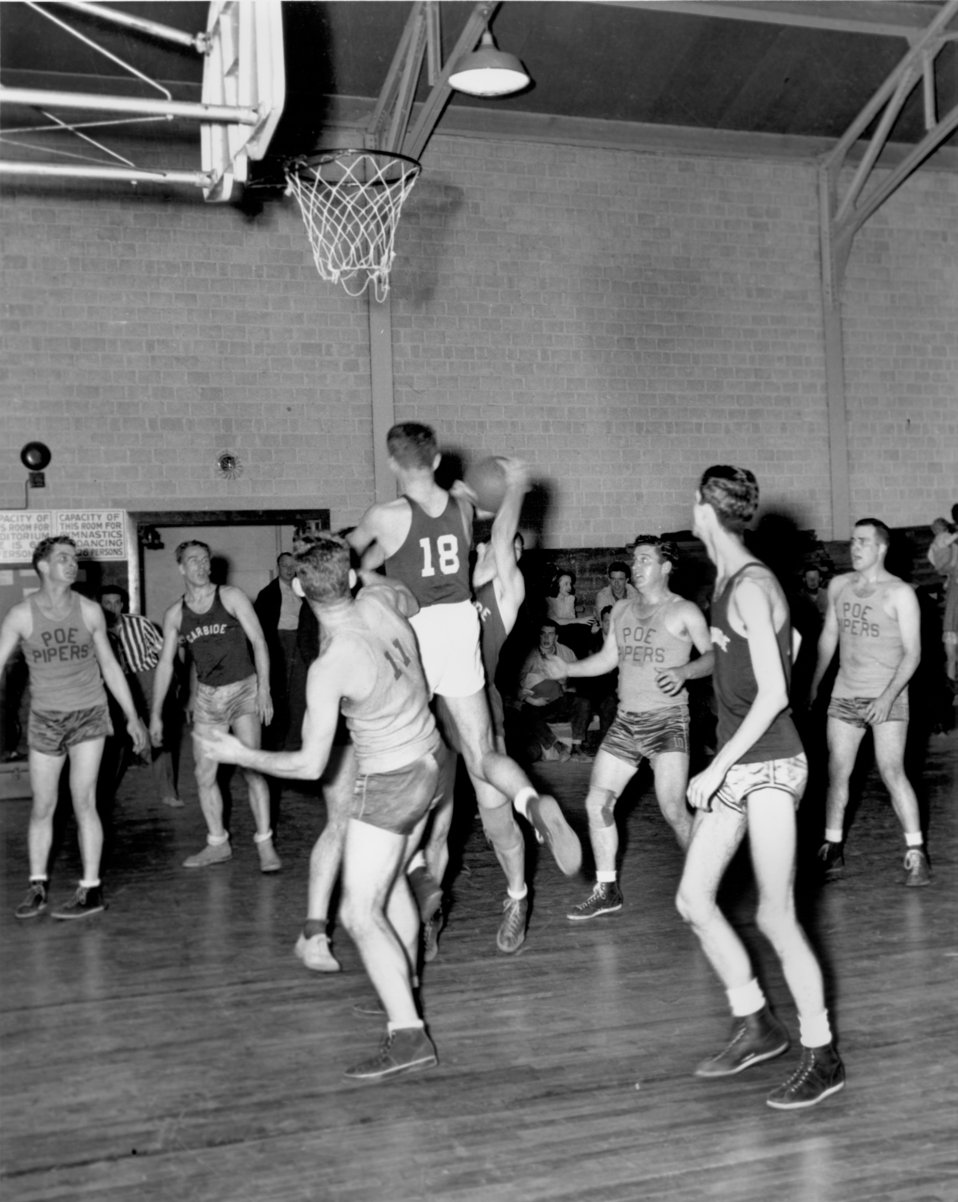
Basketball Game Oak Ridge 1945

PRO269 DOE photo Ed Westcott 1-23-1945 POE Piping vs Carbide & Carbon Oak Ridge Tennessee